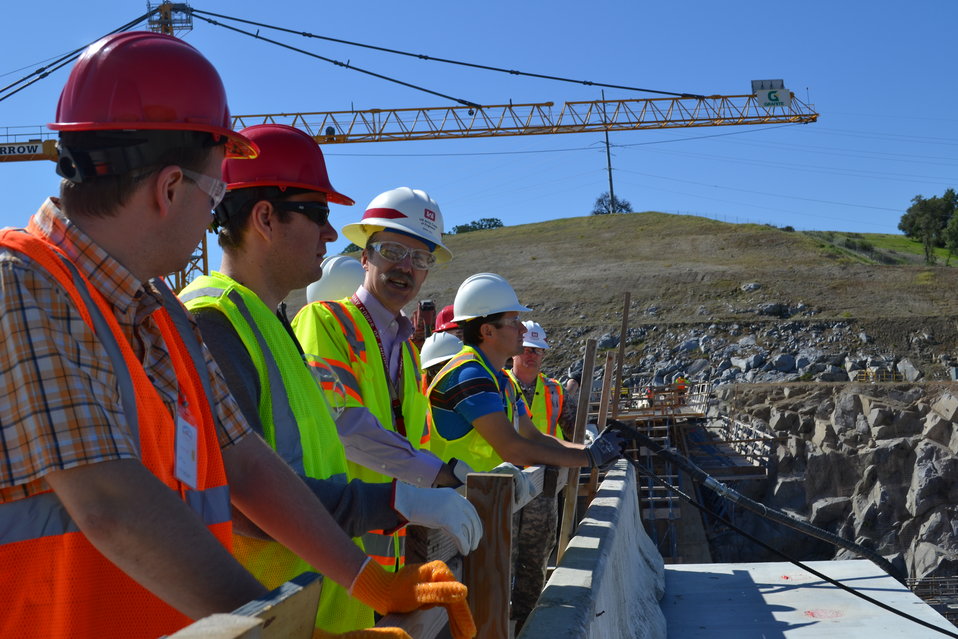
Hungarian engineers visit Folsom Dam auxiliary spillway

Brad Call, a technical engineer for Folsom Dam auxiliary spillway construction, points out areas of interest on the new dam to Hungarian members of the Floodplain Management Association during a talking tour April 10, 2014 on top of the auxiliary dam. “The idea was to bring young engineers from all over [Hungary] to get new perspectives and new ideas,” said Martin Balinta, an engineer with the Hungarian delegation (second from right).